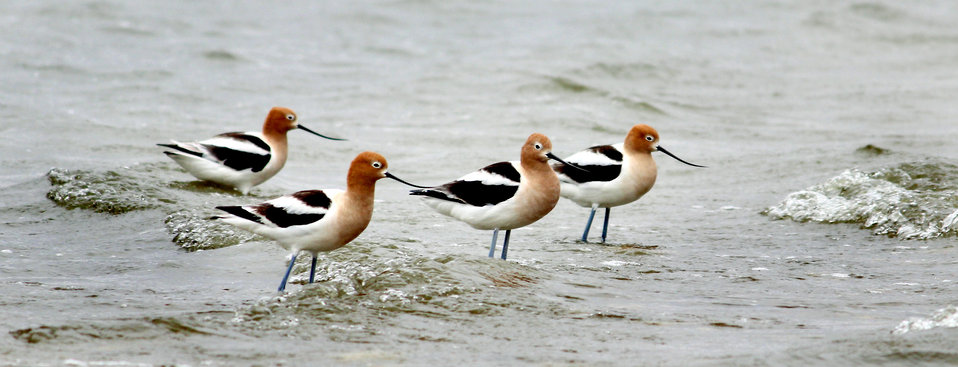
American Avocets

These avocets face the oncoming surf on a large wetland in McIntosh County, North Dakota. Avocets skim the water for invertebrate food with their slightly-upturned bills.